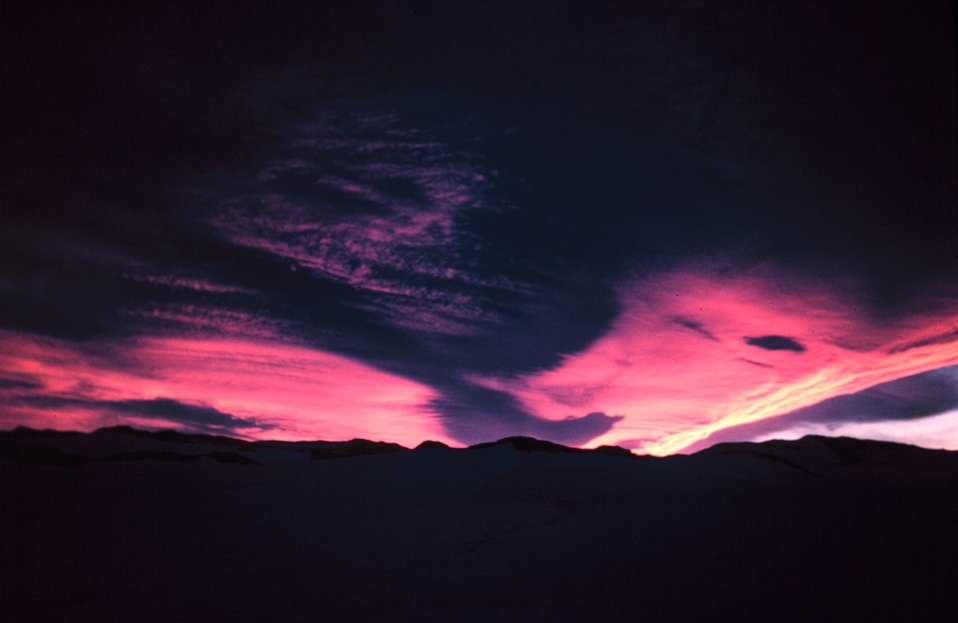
A sunset at Duse Bay